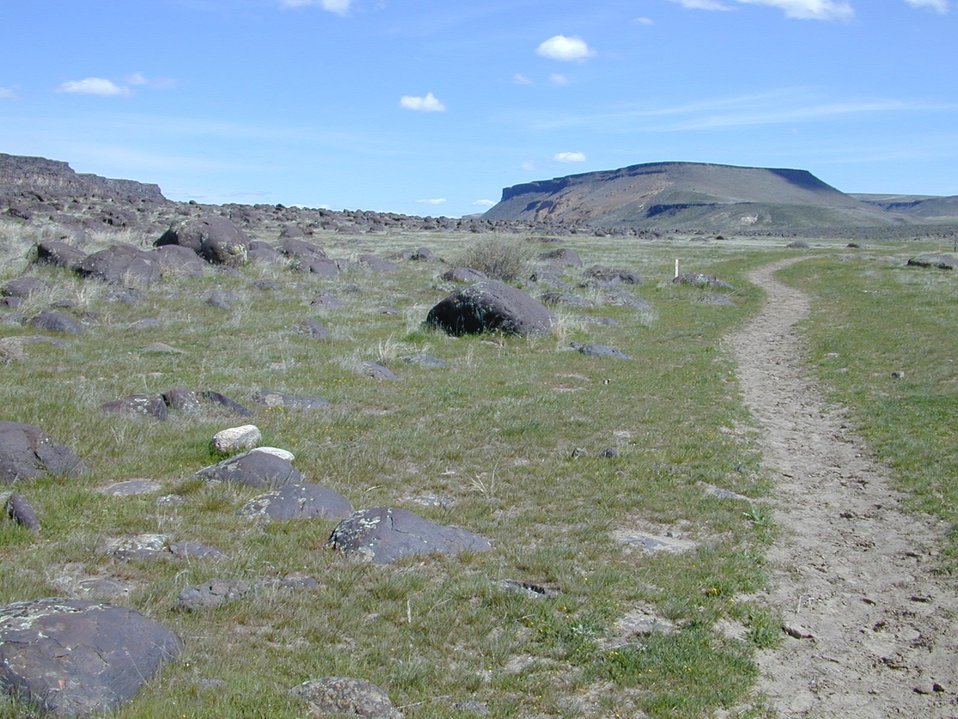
Snake River Birds of Prey National Conservation Area Lower Snake River District LSRD Snake River Canyon Trail